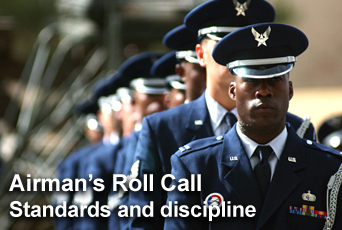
Airman's Roll Call notes importance of standards, discipline

This week's Airman's Roll Call focuses on standards and discipline, cornerstones of the Air Force's Core Values.